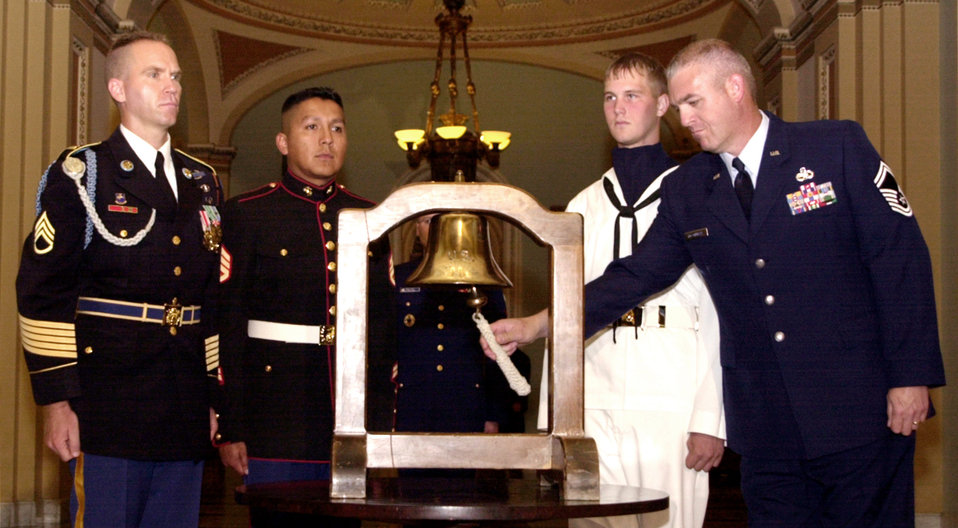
McConnell

WASHINGTON -- Senior Master Sgt. Thomas McConnell rings the